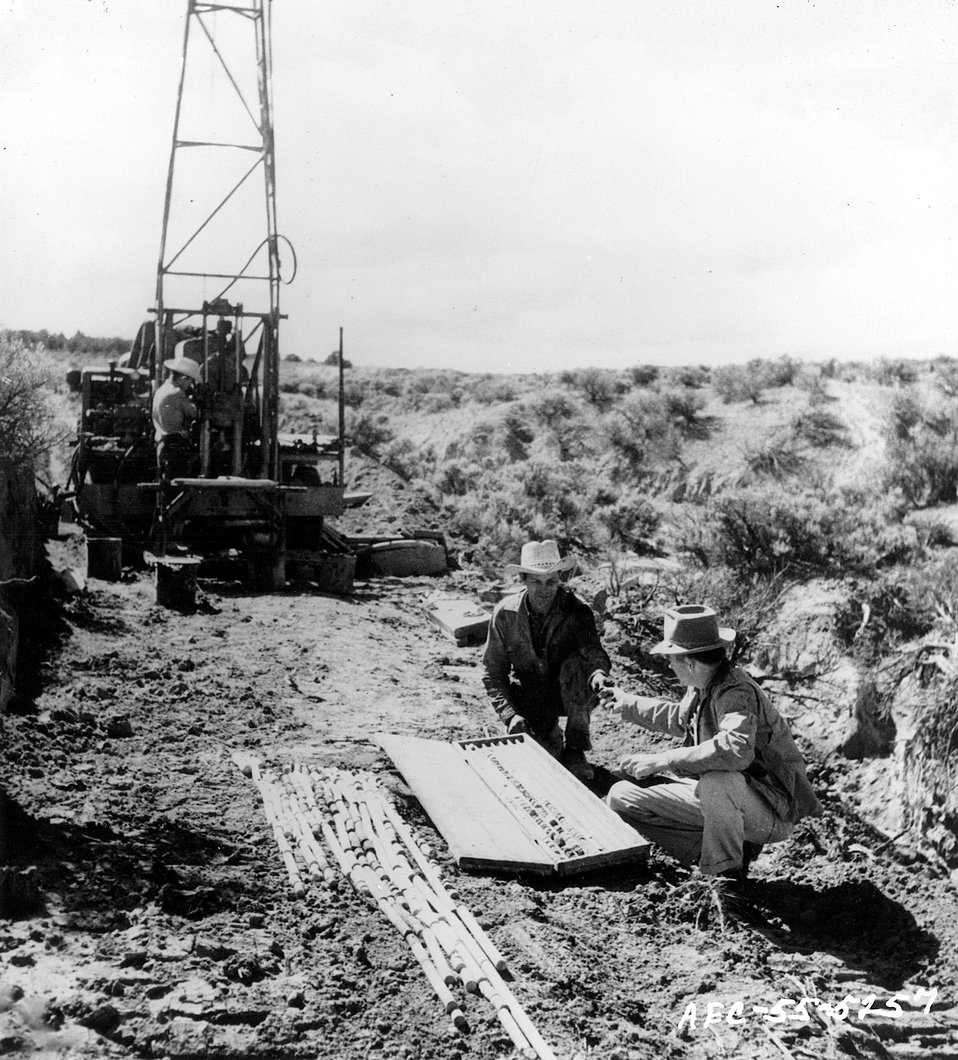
Cores from a diamond drilling operation for uranium ore are here being examined by a geologist. c. 1955